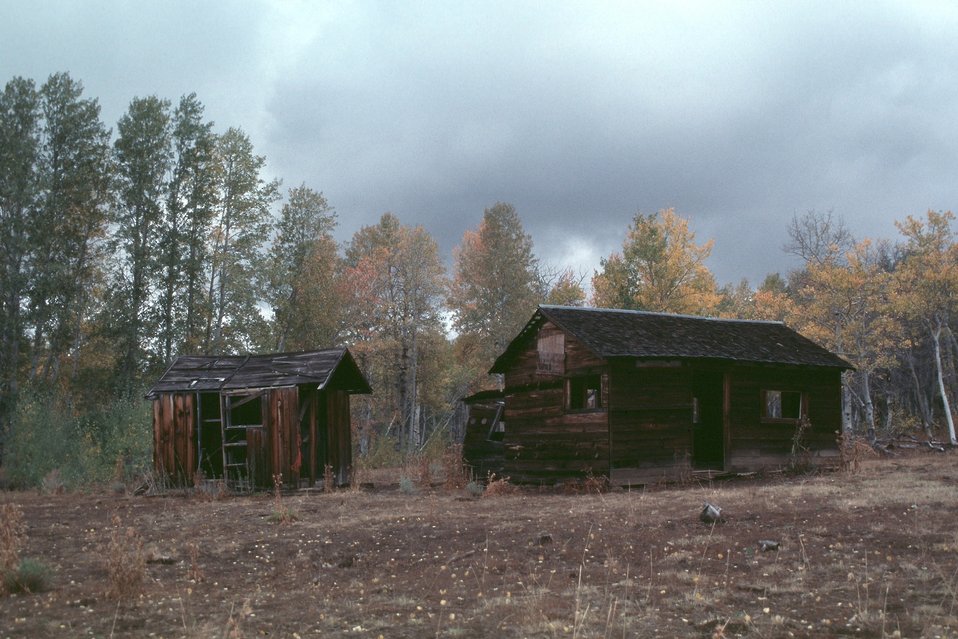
Nye Place Cabins on side of road next to road looking South.